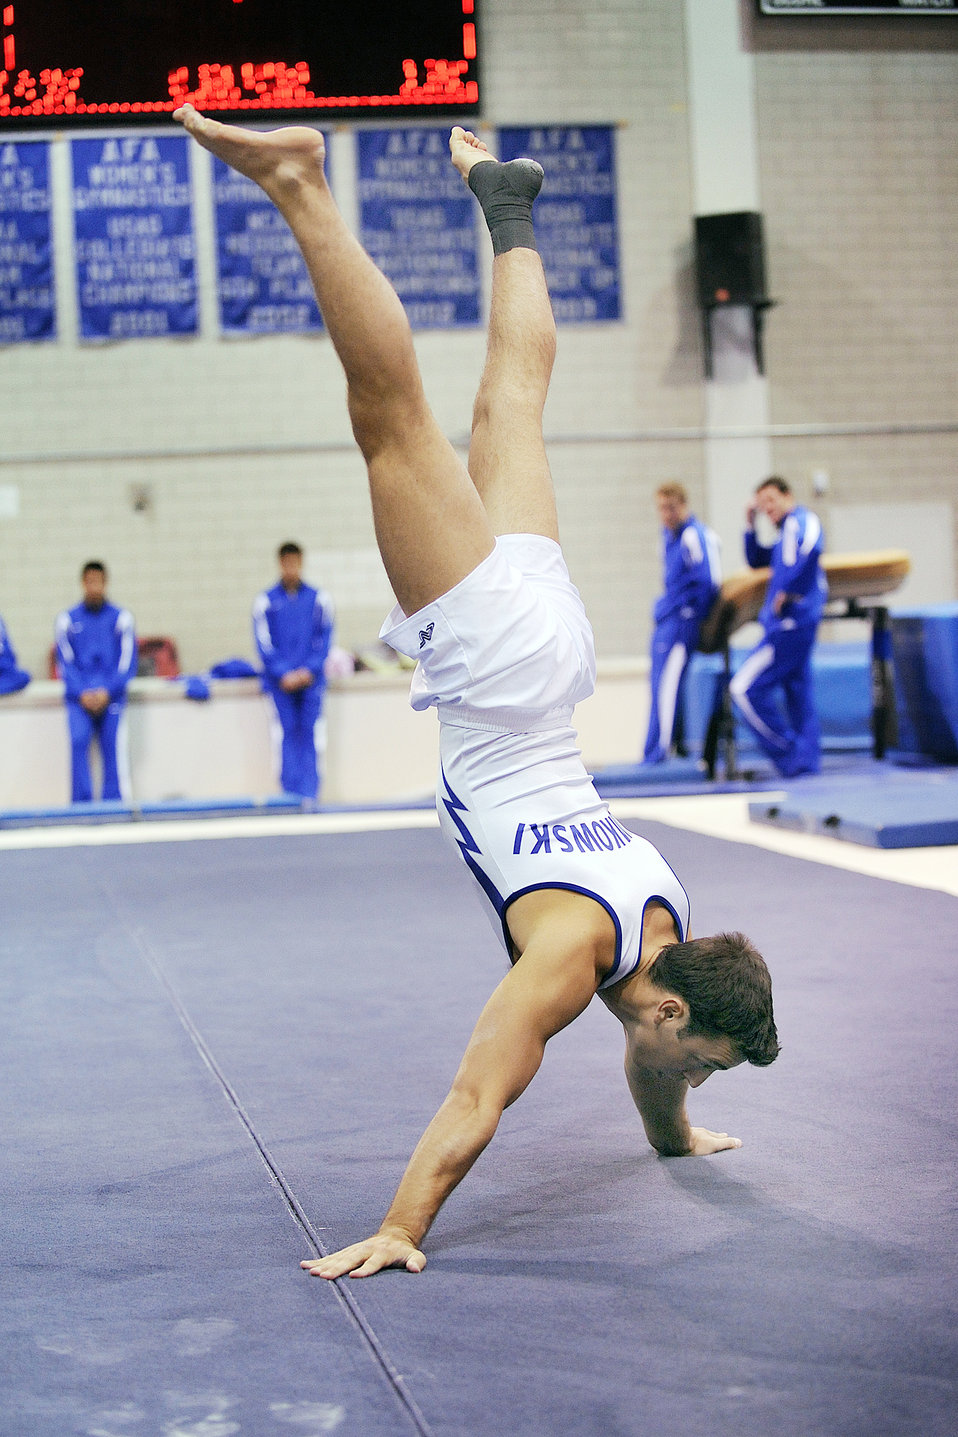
Academy gymnasts compete in Blue-Silver invitational

U.S. Air Force Academy Junior Dan Klimkowski competes in the floor exercise during the second annual Blue-Silver Invitational at the Cadet West Gym Dec. 5, 2009. Cadet Klimkowski paced the silver team on the floor exercise with a score of 13.700, and also won the still rings with a score of 13.550 as the Air Force gymnastics